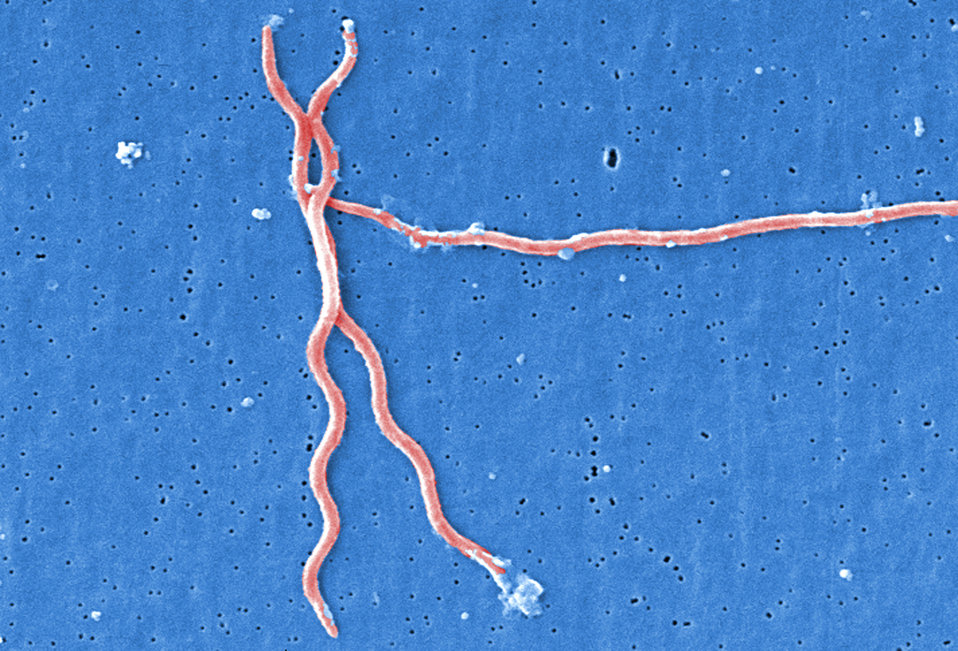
Under a high magnification, this digitally-colorized scanning electron micrograph depicts three Gram-negative, anaerobic, Borrelia burgdorferi bacteria, which had been derived from a pure culture.